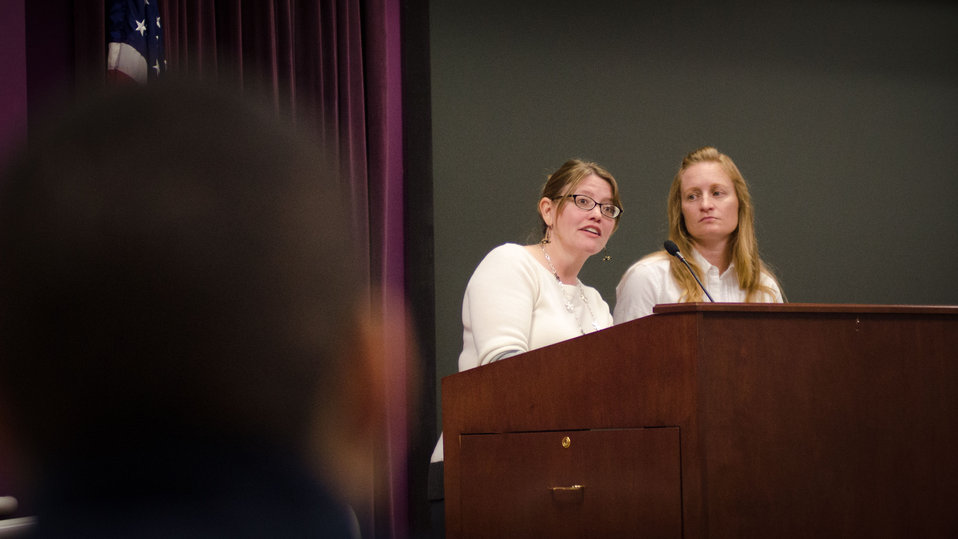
Victory Farms, Inc. owner Gina Cavallo Collins (left) and Monrovia Farms, LLC, Owner Cathy Cavender answer questions about their businesses after the Marketing Panel discussion of the “Virginia State University (VSU), U.S. Department of Agriculture (USDA) and Virginia Farmers Working Together” outreach workshop in the VSU, L. Douglas Wilder building on Thursday, March 7, 2013, in Petersburg, VA.